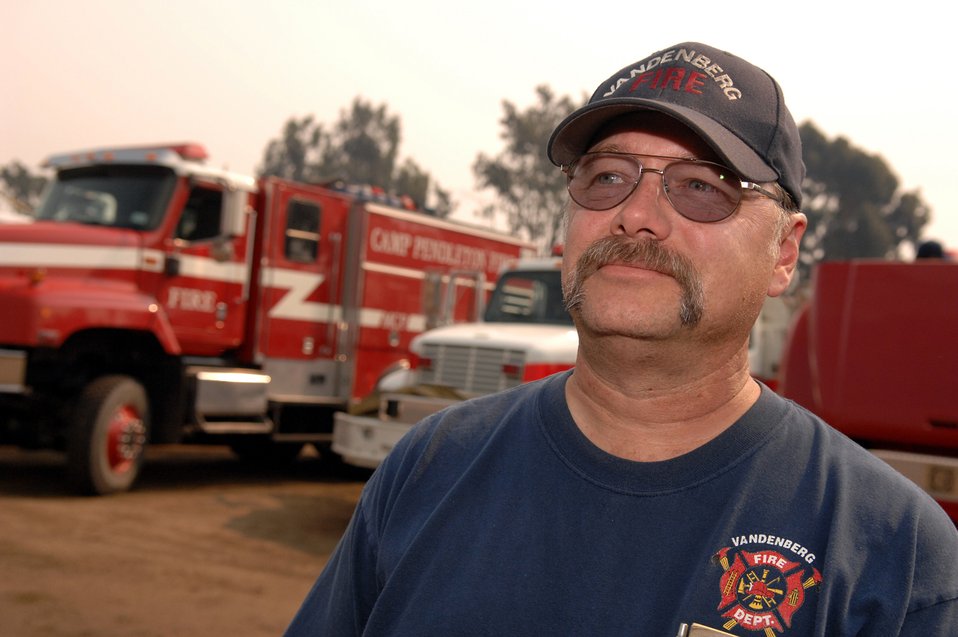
Vandenberg firefighters extend helping hand

Tim Murdoch observes the base camp Oct. 25 at Camp Pendleton, Calif. Mr. Murdoch, an engineer from Vandenberg Air Force Base, Calif., has been assigned to the base camp as the camp manager. Vandenberg AFB currently has 12 firefighters dispatched throughout Southern California in support of more than 26 fires that have burned more than 1,800 homes and 550,000 acres.